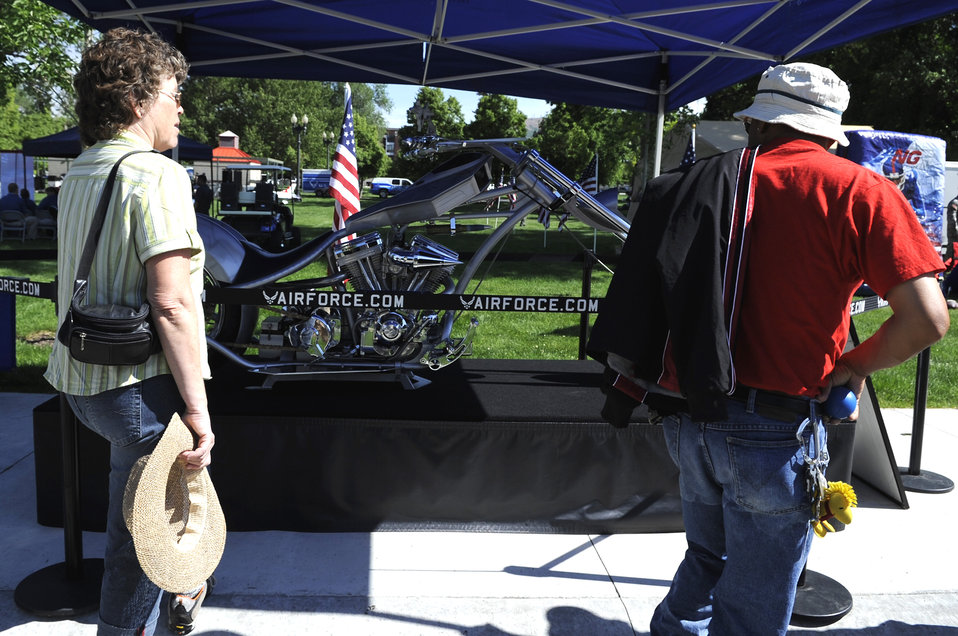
Our Nation's Defenders Showcase

The Air Force motorcycle, designed by Orange County Choppers, is on display at the